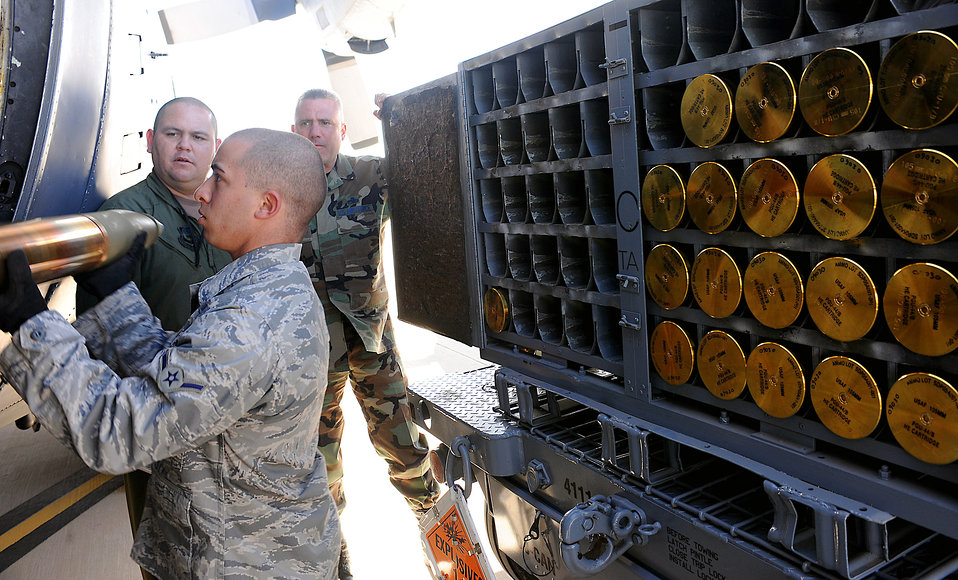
Cannon ammo Airmen ready for gunship arrival

Amn. Frank Lauria hands a 105 mm cannon round to an aerial gunner inside a 16th Special Operations Squadron AC-130H Spectre gunship while training on the combat aircraft parking area at Cannon Air Force Base, N.M. Feb. 6. Airman Lauria and the munitions flight will be responsible for supplying live and training ammunition to special operations aircraft moving to the base. The Air Force Special Operations Training Center observed the loading procedures to help create a formal training program for use throughout Air Force Special Operations Command. Airman Lauria is assigned to the 27th Special Operations Equipment Maintenance Squadron Munitions Flight.